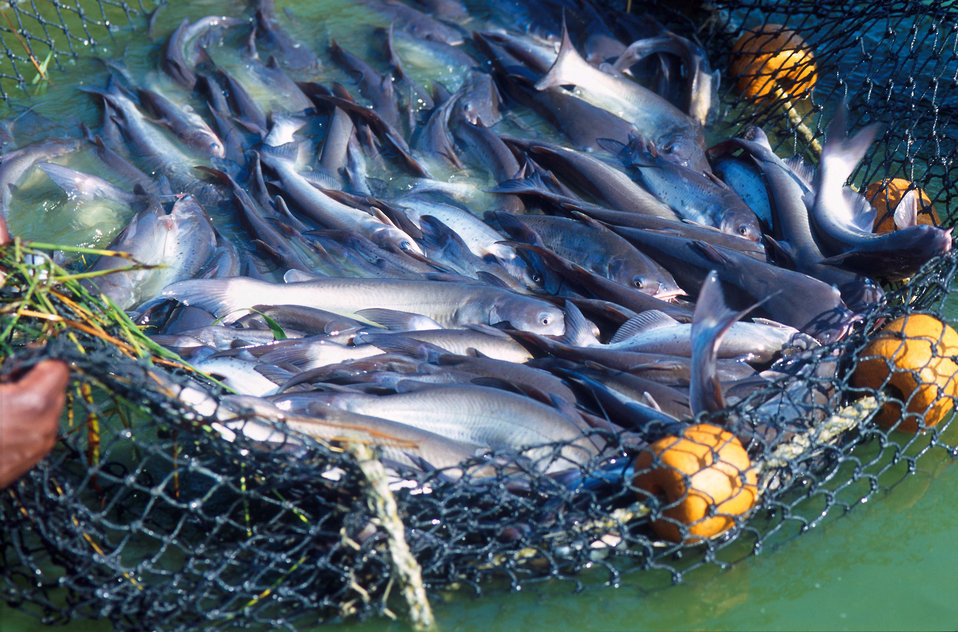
Market-size U.S. Department of Agriculture (USDA) 103 catfish are ready for harvest on May 1, 2012. This new variety grows faster than other tested catfish.